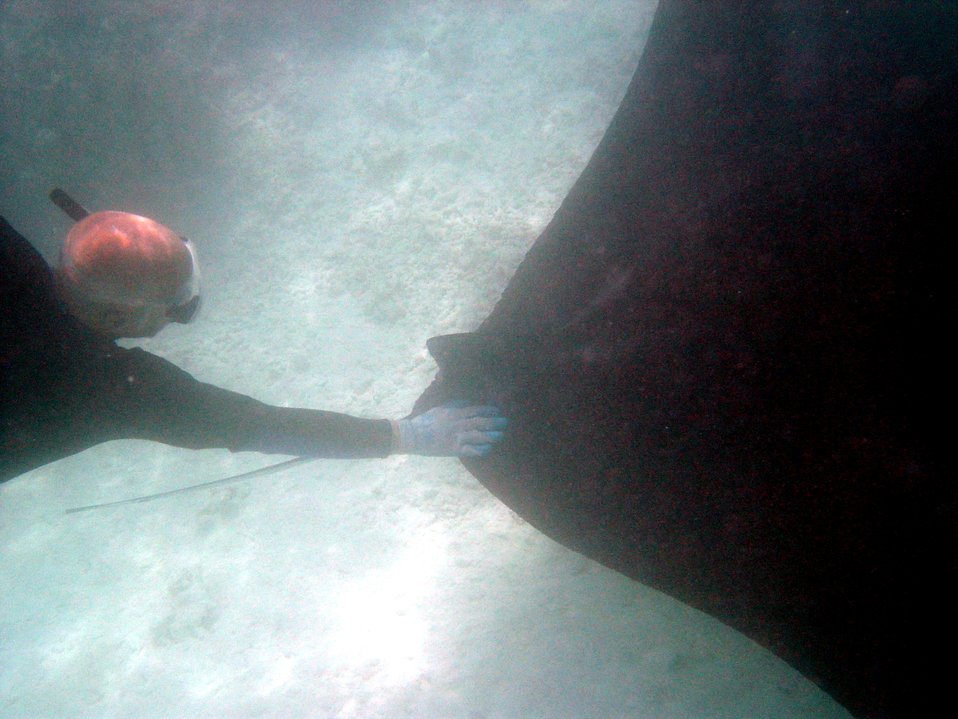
A large manta ray (Manta birostris).